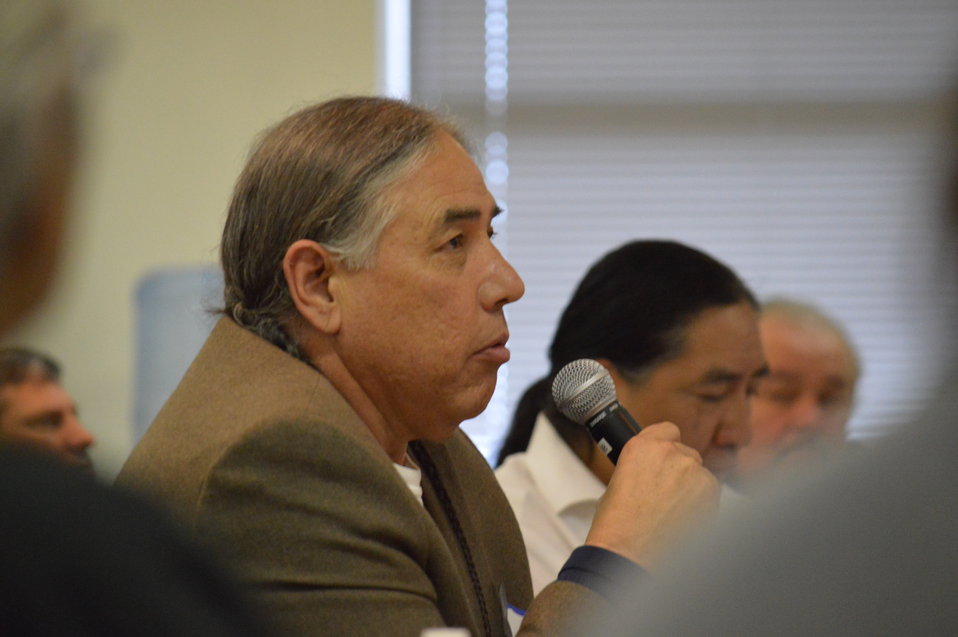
Eagle Summit III

Questions and comments at the Eagle Summit III in Denver, Colorado on March 20, 2014 at the Rocky Mountain Arsenal National Wildlife Refuge.